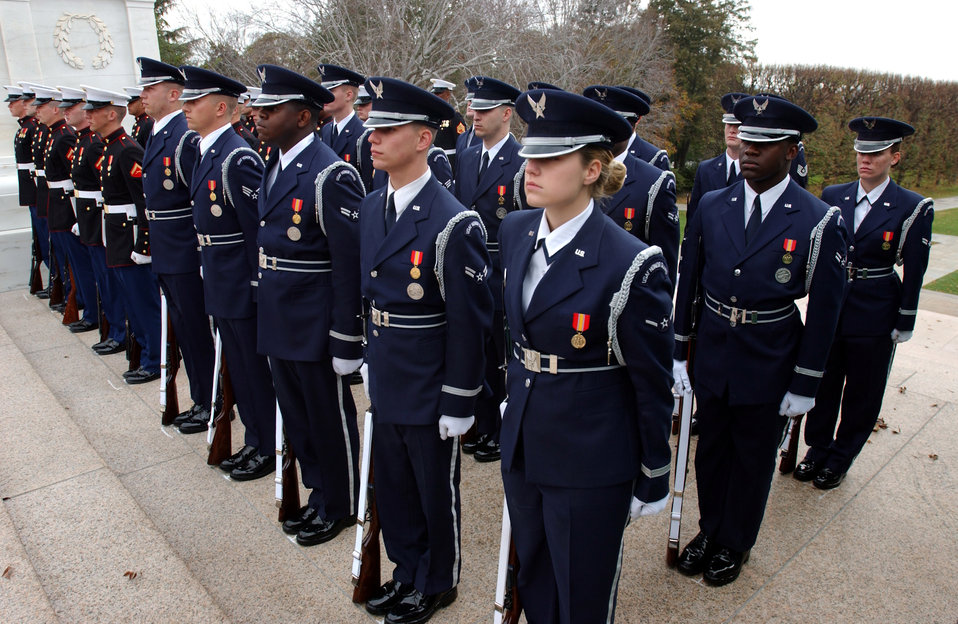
Veterans Day

ARLINGTON, Va. -- U.S. Air Force Honor Guard airmen and Marines stand at attention while at the Tomb of the Unknowns on Nov. 11. The servicemembers participated in the Veterans Day wreath-laying ceremony at Arlington National Cemetery.